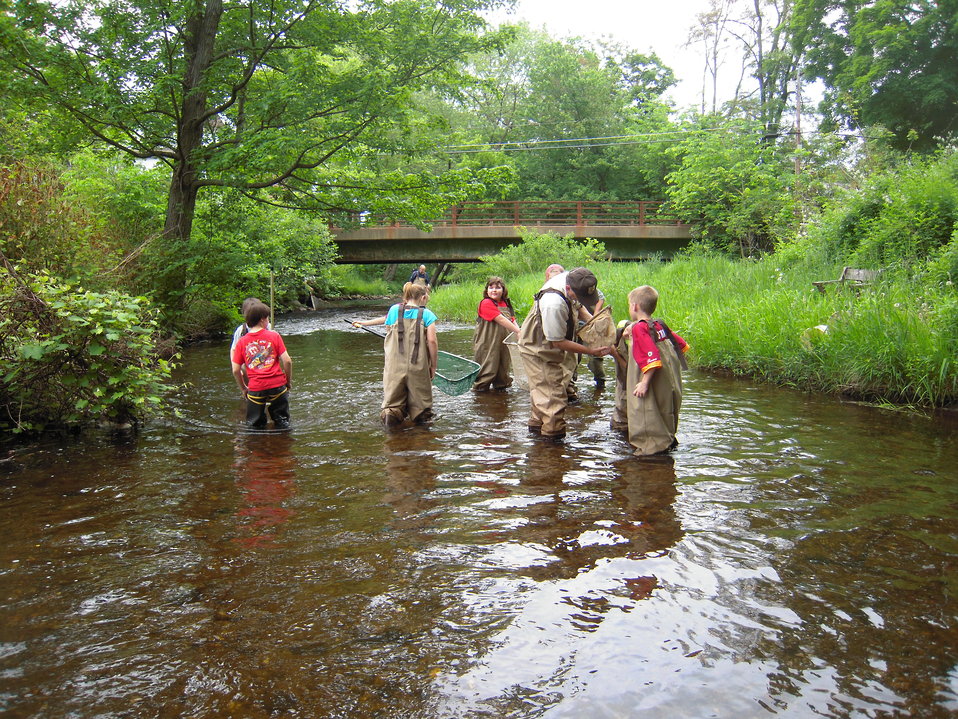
Novak and kids in stream